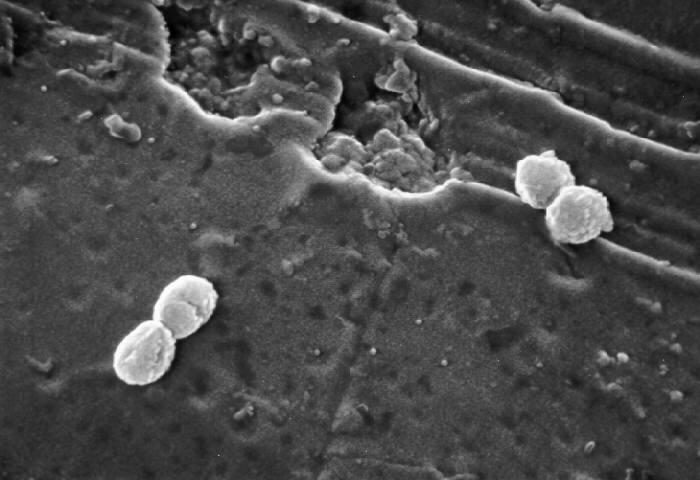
This scanning electron micrograph depicted a number of Gram-negative Acinetobacter anitratus bacteria.